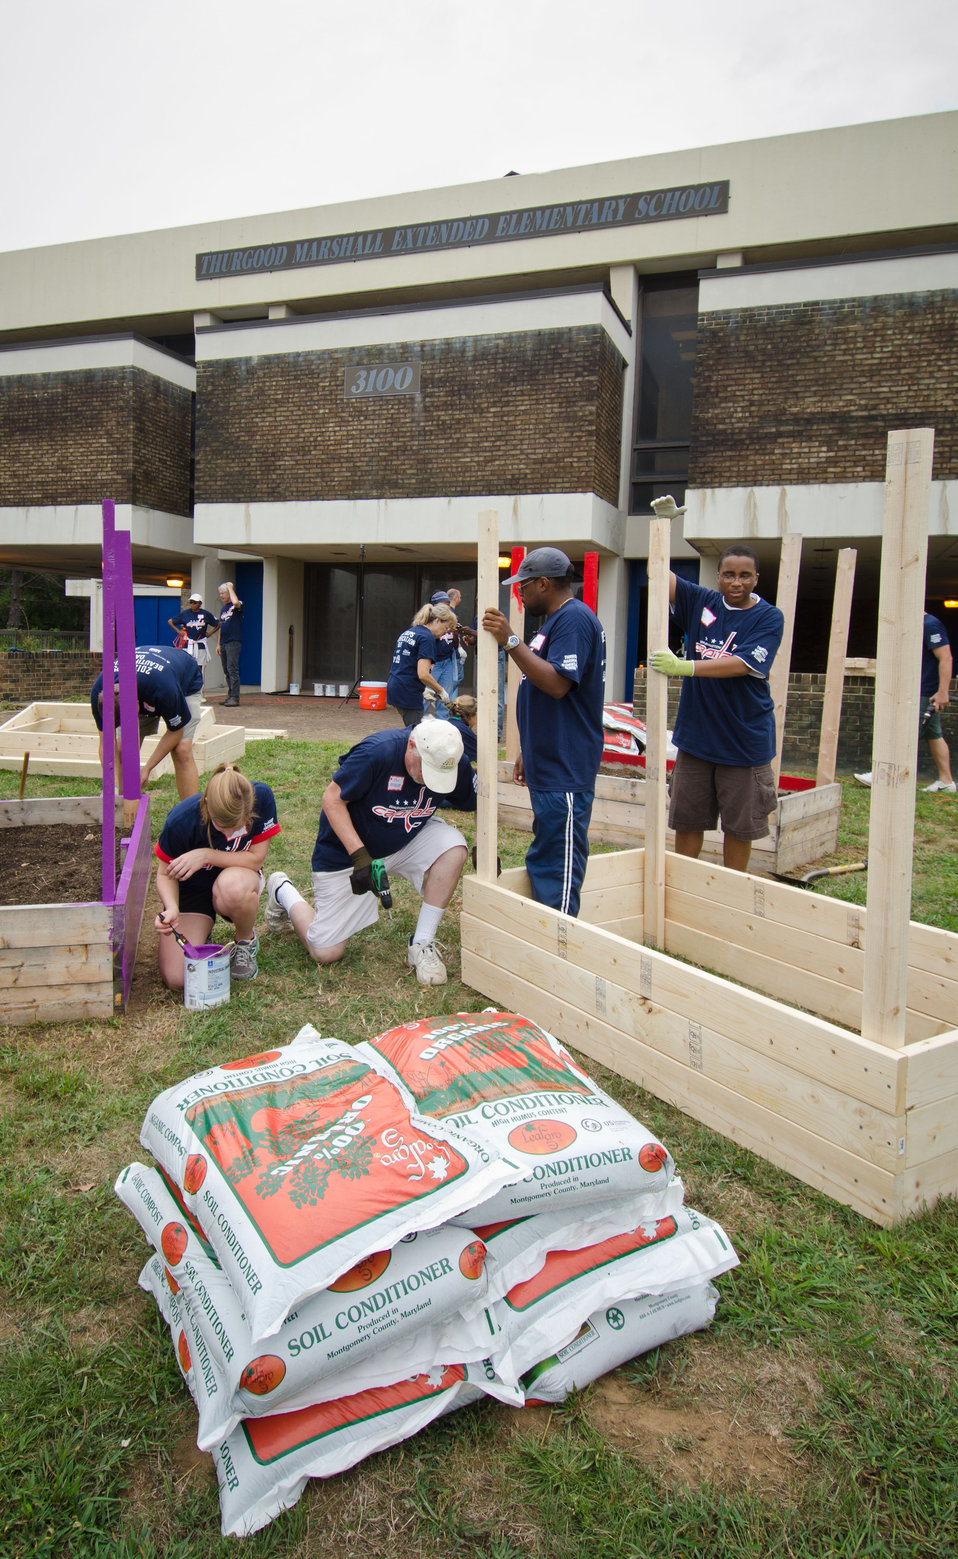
U.S. Department of Agriculture (USDA) People’s Garden Executive Master Gardeners, friends, and family, along with Washington Capitals fans are volunteering in District of Columbia Public Schools’ (DCPS) Beautification Day, on Saturday, August 25, 2012, at Thurgood Marshall Elementary School, in Washington, D.C. Each year people are invited to help “spruce up” public school facilities in preparation for the first day of school. More than 70 volunteers pitched in at this large school facility. The People’s Garden effort involves building and painting raised planter boxes, then preparing the soil mixture so they are “ready to grow.” Additionally, a team that includes descendants of U.S. Supreme Court Justice Thurgood Marshall assembles a prefabricated garden toolshed. The Justice’s son, John Marshall leads the team, which includes Brianna the Justice’s great-grand daughter in one of many multi-generational efforts at this school today. Washington Capitals Forward Mike Riberio, his family and mascot Slapshot participated in every project underway at Marshall School. From the outside gardens, to inside murals, and robotics worktable construction, the teams made their goals.